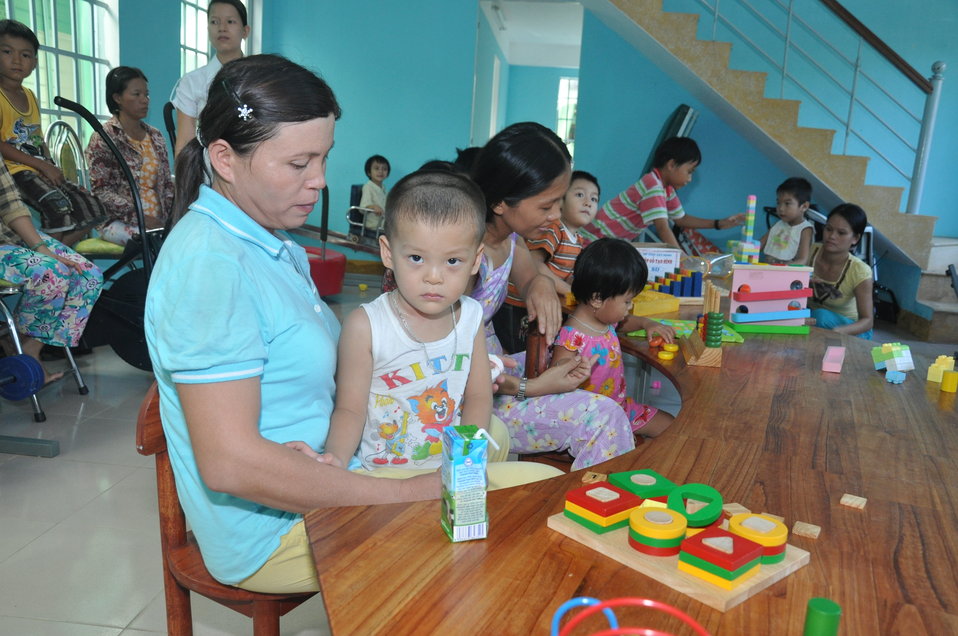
USAID Supports Persons with Disabilities in Danang

Danang, June 10, 2013.